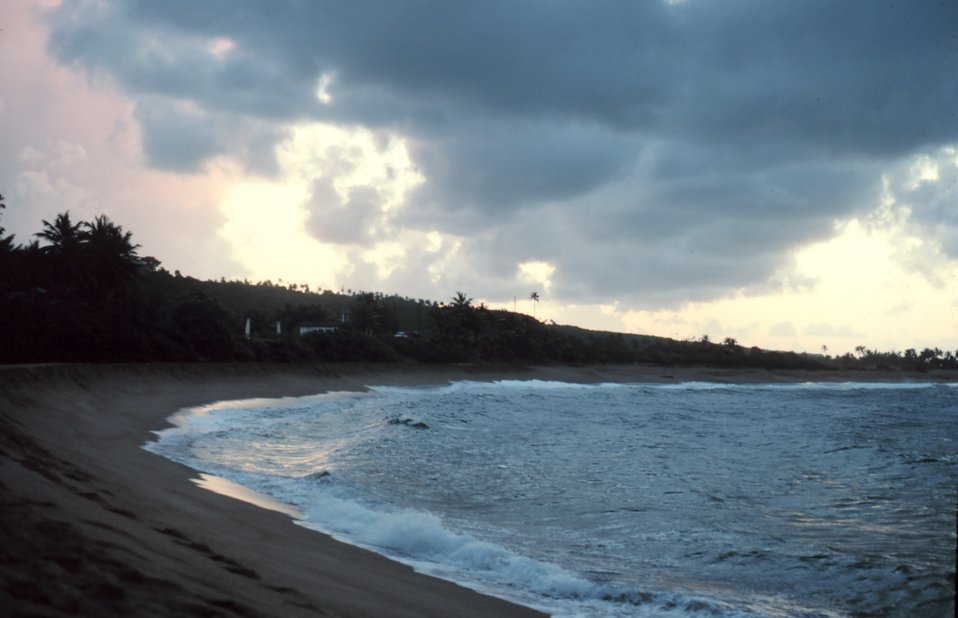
An arcuate beach near the NW corner of Puerto Rico.